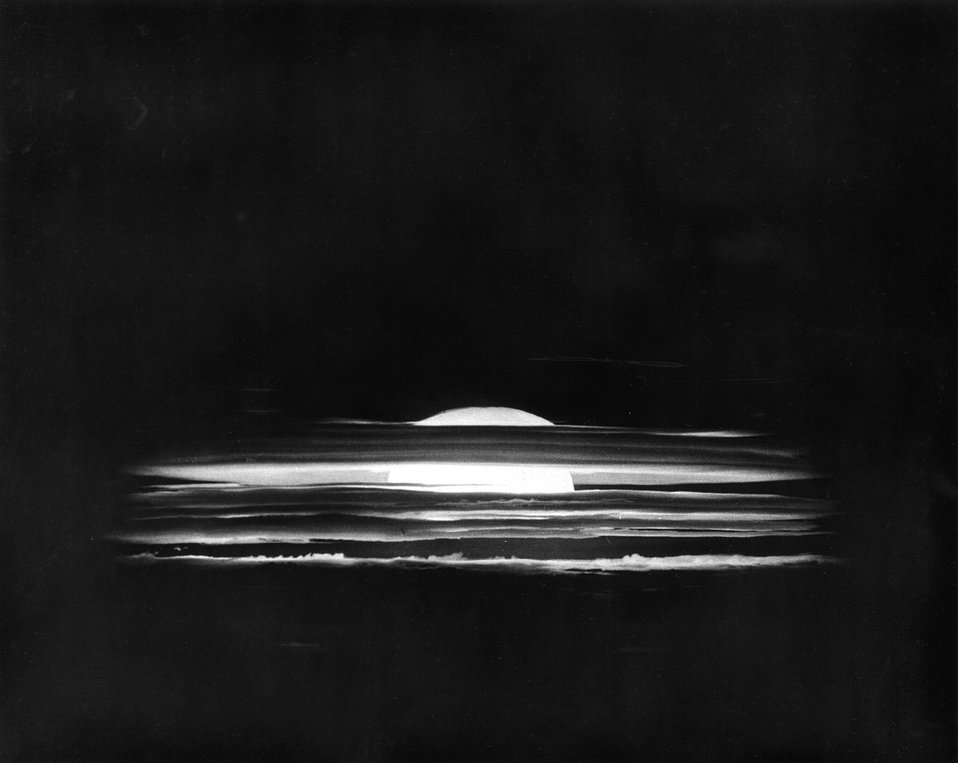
Fireball of May 21, 1956 test detonation over Bikini Atoll.